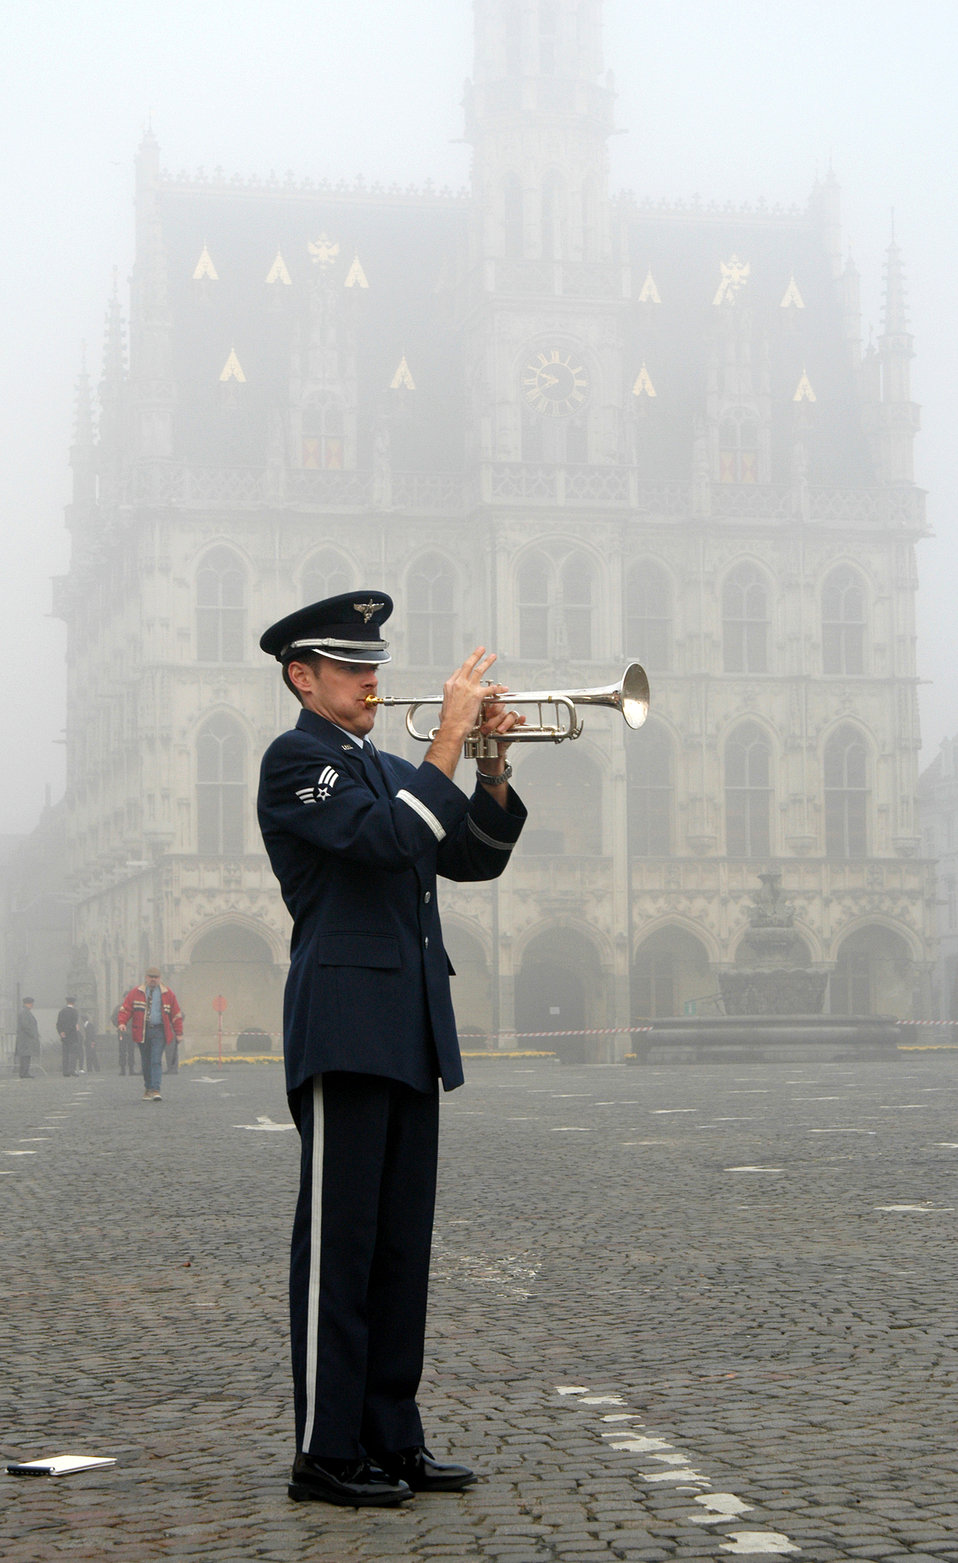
Remembering World War I veterans

OUDENAARDE, Belgium -- Senior Airman Shawn Ford warms up his trumpet before performing in a Veterans Day ceremony here Nov. 11. He was one of the U.S. Air Forces in Europe Band airmen who participated in a multinational ceremony which honored American, French, British and Belgian forces that died fighting German forces during World War I. In all, more than 4,700 American servicemen died fighting in Belgium during the war, and 368 of them remain buried near here in Flanders Field American Cemetery.